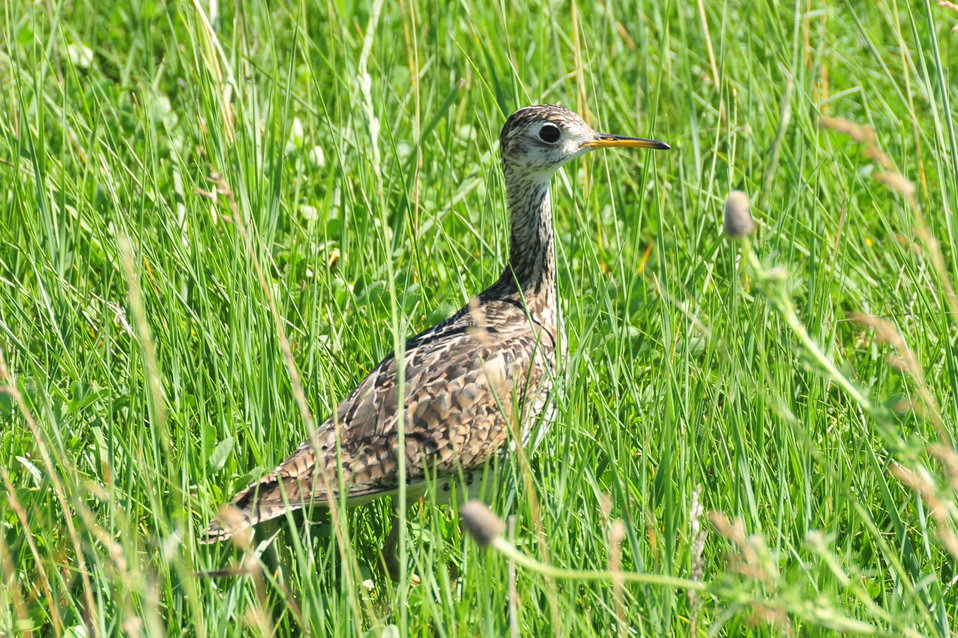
Upland Sandpiper in Native Prairie Sand Lake WMD 1